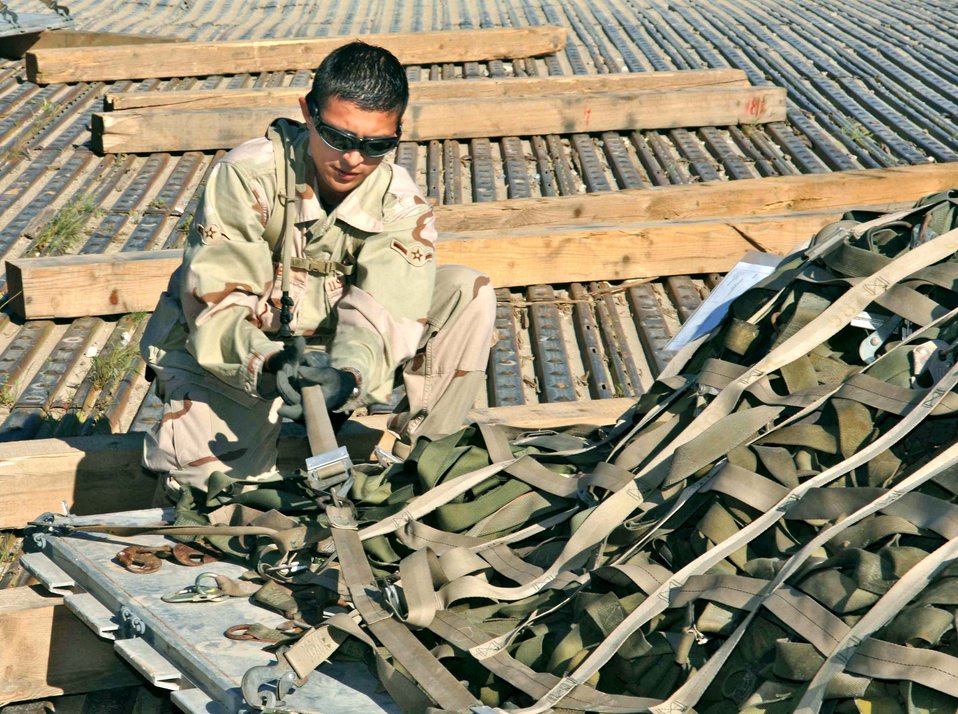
Pallet pursuit nets plentiful return

BAGRAM AIR BASE, Afghanistan -- Airman Carlos Reyes secures nets for pallets after they were recovered by Airmen from the 455th Expeditionary Logistics Readiness Squadron. The Airmen collected and returned 2,417 pallets and 4,489 net sets in three months.